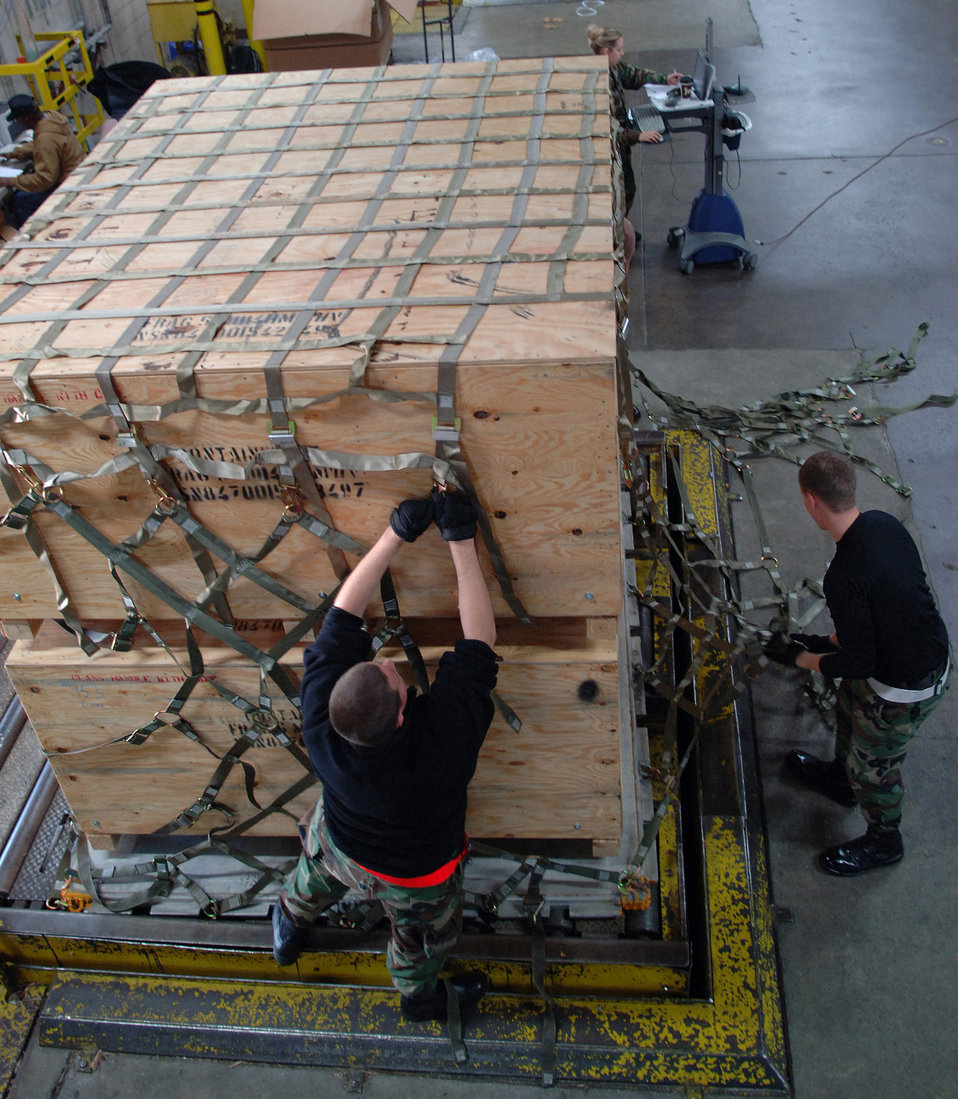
Loading Up

Airmen from the 437th Aerial Port Squadron tie down netting to secure pallets carrying